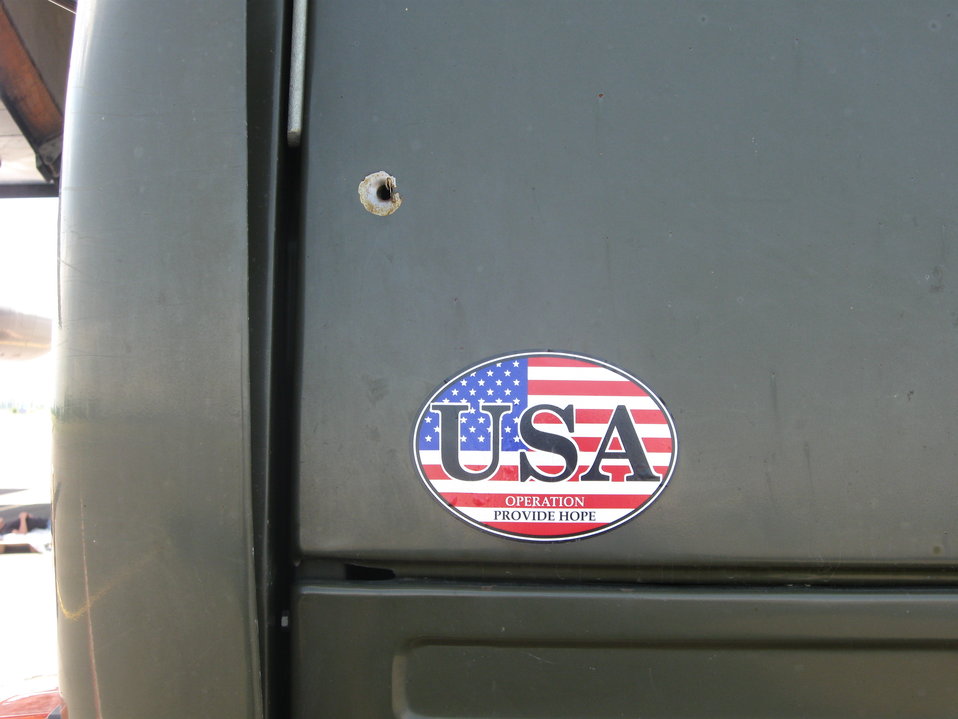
U.S. Embassy Bishkek FSO Paul Takes a Photo of a Bullet Hole on an Aid Delivery Truck

Foreign Service Officer Andrew B. Paul of the U.S. Embassy Bishkek takes a photo of a bullet hole on one of the aid delivery trucks in Osh, Kyrgyzstan, on June 26, 2010.